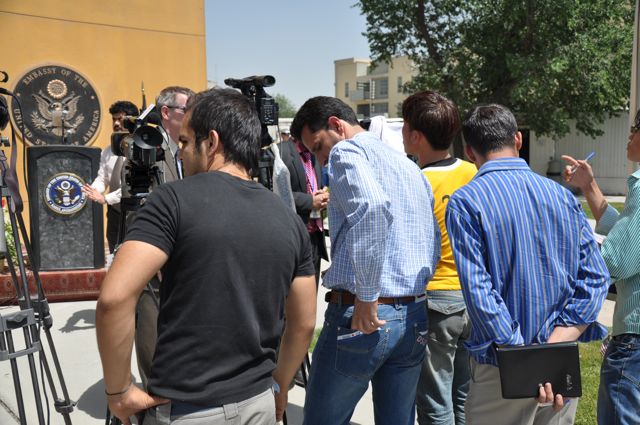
Memorial Day at US Embassy in Kabul